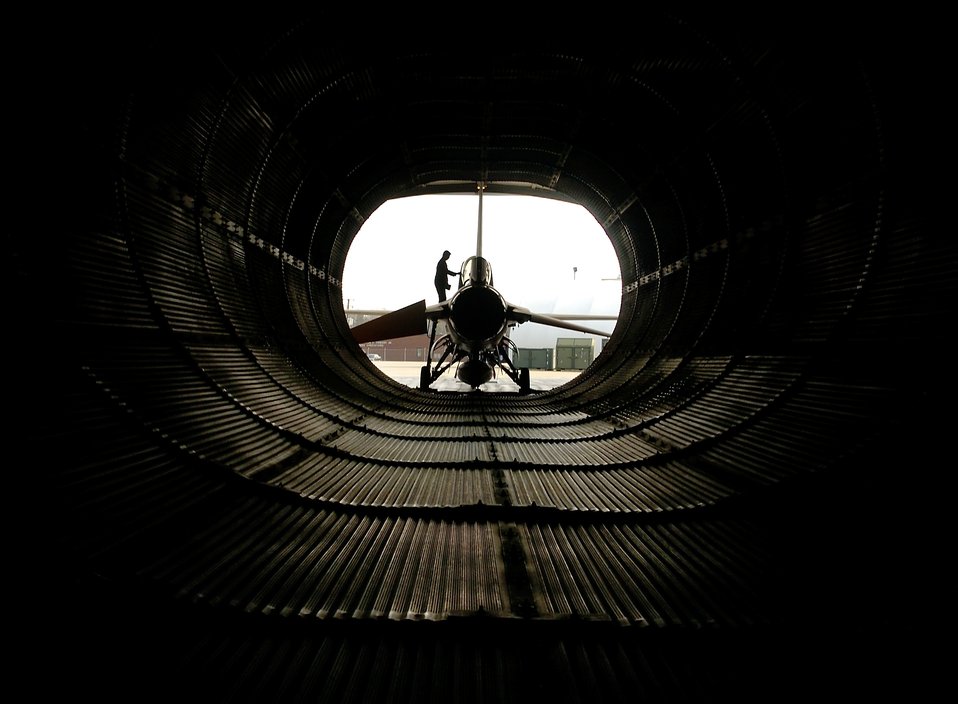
Preparing the engine

Tech. Sgt. Paul Holloway prepares an F-16 Fighting Falcon for engine run at the Virginia Air National Guard located at Sandstone, Va., on Friday, March 31, 2006. Tech Sgt. Paul Holloway is a maintainer with the 192nd Aircraft Maintenance Squadron.